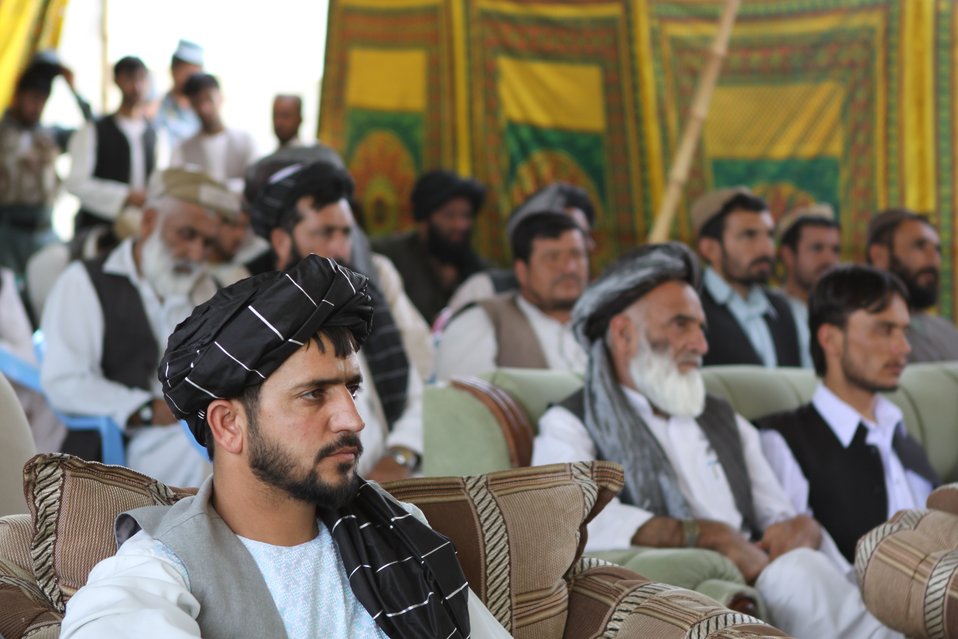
Bolan Poultry Farm